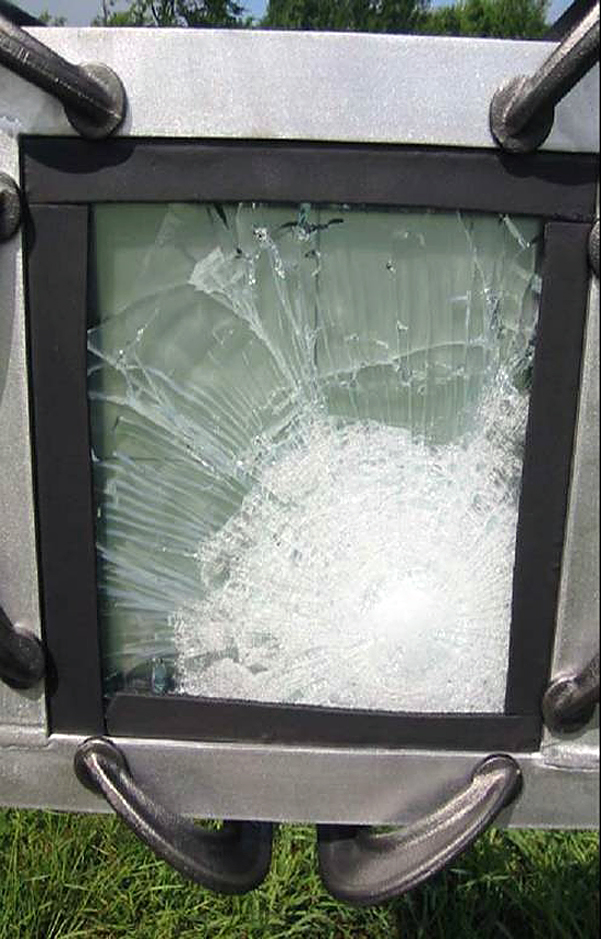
Bullet proof

WRIGHT-PATTERSON AIR FORCE BASE, Ohio -- This ground-finish transparent armor test piece withstood the impact of a .30 caliber armor-piercing bullet fired from 25 yards away using a Russian M-44 sniper rifle. Shown is the test piece, which demonstrates the armor's ability to stop penetration from armor-piercing threats.